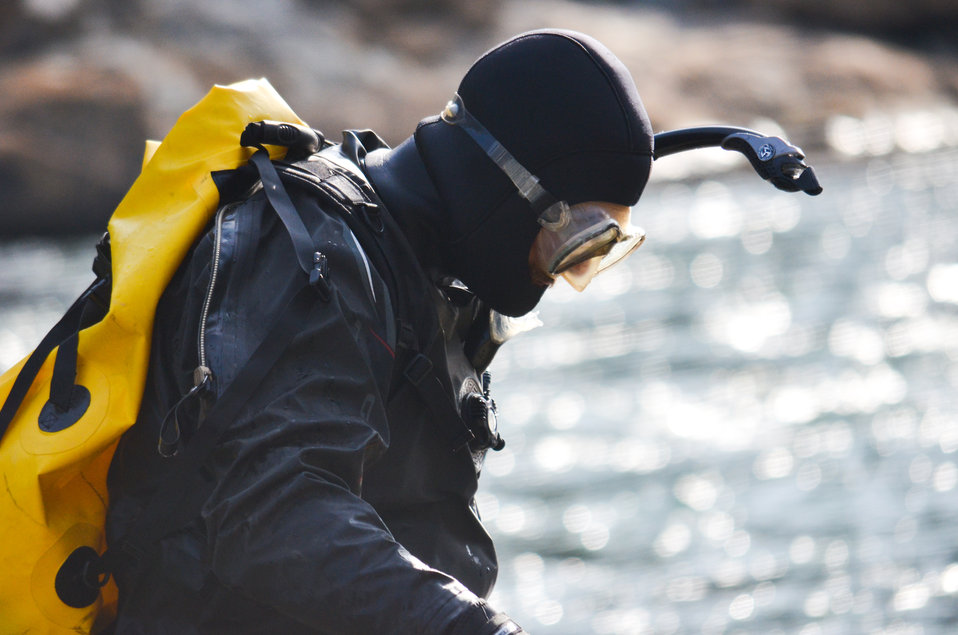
Tracking salmon spawning below Englebright Dam

Pacific States Marine Fisheries Commission biologist Casey Campos looks for evidence of salmon spawning in the Yuba River below Englebright Dam near Smartsville, Calif., Dec. 12, 2011. Under the direction of the National Marine Fisheries Service, the U.S. Army Corps of Engineers Sacramento District, which owns and manages the dam, has placed more than 5,000 tons of gravel in the river to improve spawning habitat for the threatened Chinook salmon and steelhead trout species. The PSMFC is charged with tracking spawning activity related to the new gravel.